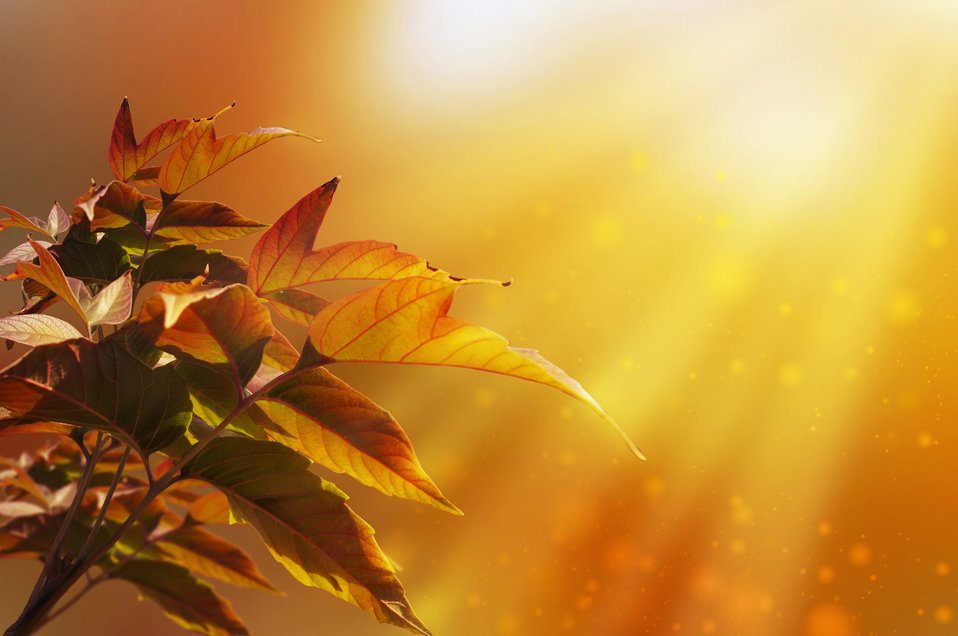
Maple-leaf

Autumn background with maple leaves.